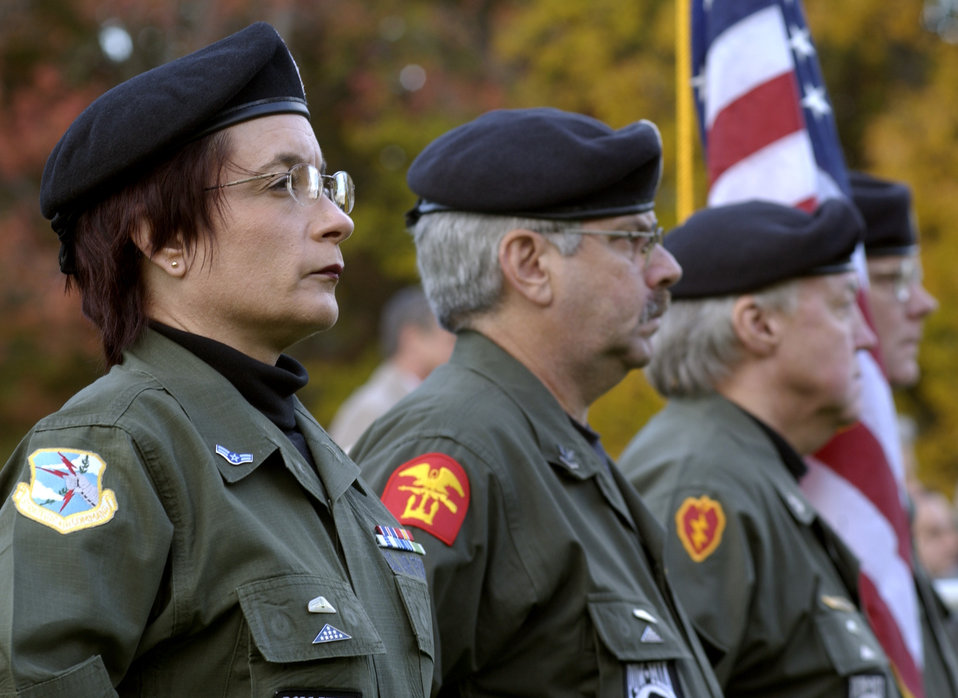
Thousands come to commemorate The Wall's 20th

WASHINGTON -- Roni Aborn (from left), Mike Walters, Ron Detmer and Bob Smith, members of the Vietnam Veterans of America Chapter 97, Dayton, Ohio, stand color guard duties during opening ceremonies commemorating the 20th anniversary of the Vietnam Veterans Memorial on the Mall here Nov. 7. Aborn served in the Air Force during Vietnam as a B-52 avionics technician. She is now an F-16 program manager at Wright Patterson Air Force Base, Ohio.